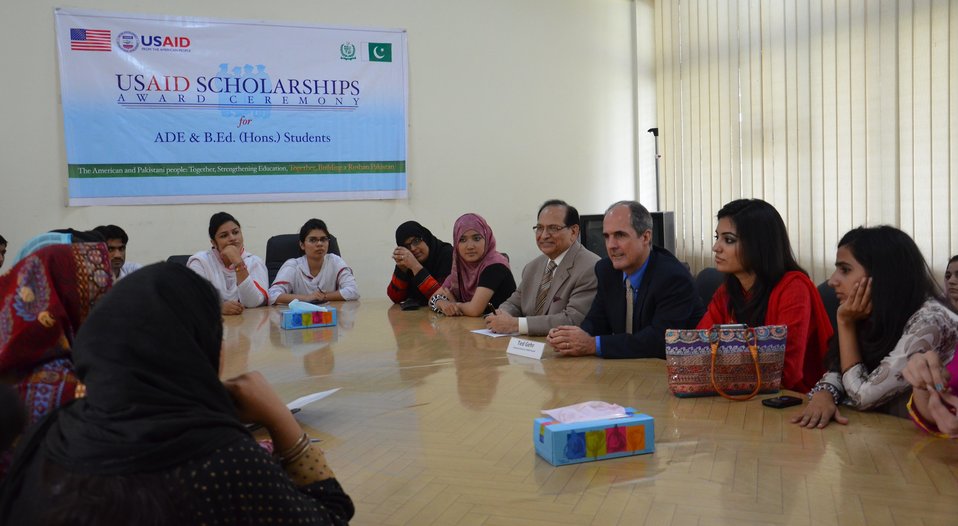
USAID officials interacting with students after the scholarship award ceremony

The U.S. Agency for International Development (USAID) through its Teacher Education Project awarded scholarships to 147 talented students enrolled in the recently introduced two-year Associate Degree in Education (ADE) and four-year Bachelor’s Degree in Education programs in Punjab.